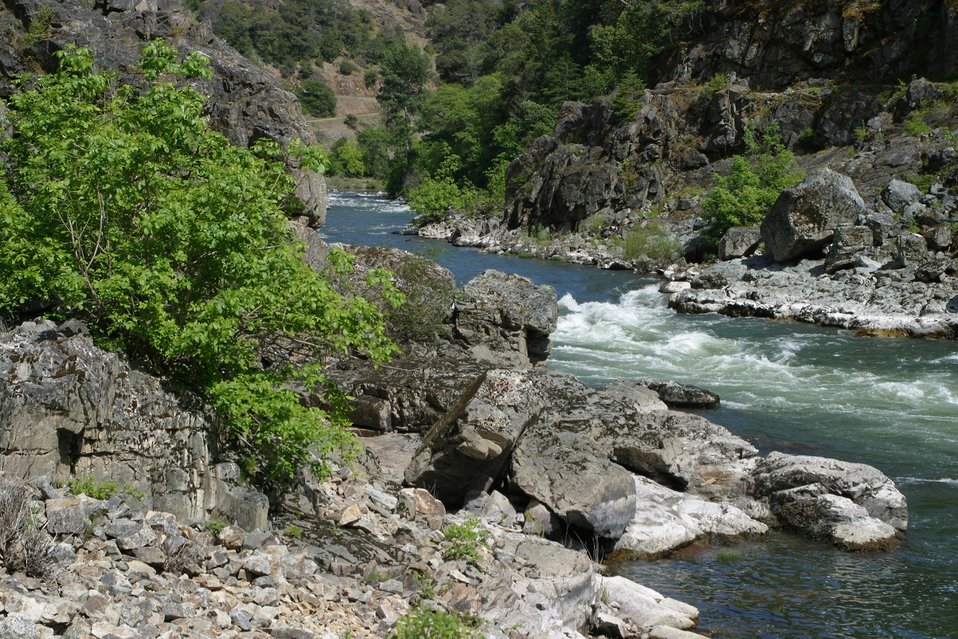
Wild section of the Rogue River from Grave Creek to Foster Bar. 3100 cfs at Grants Pass and 5300 at Agness.